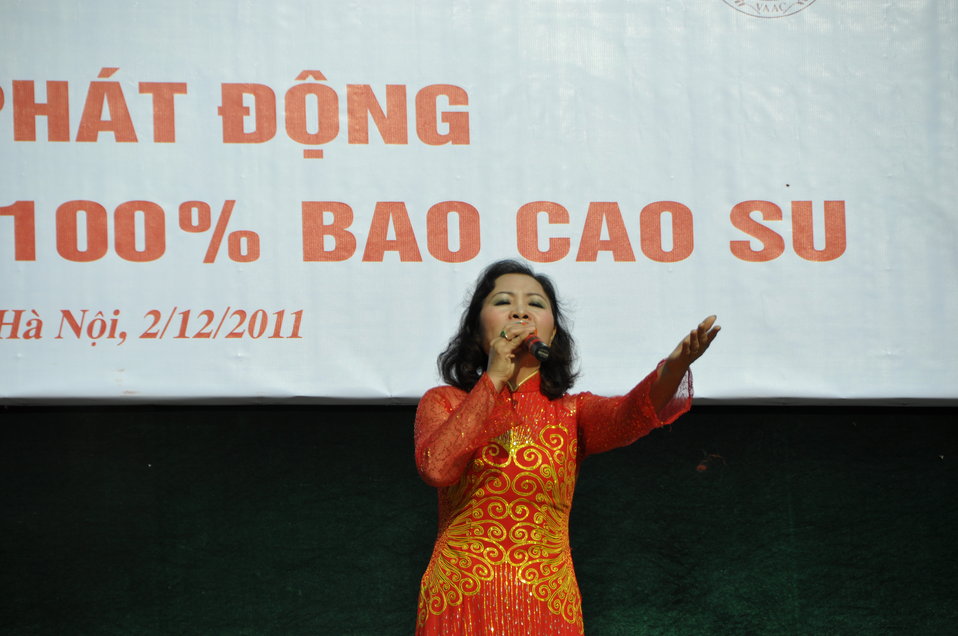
100% Condom Use Campaign Launch, Dec. 2, 2011